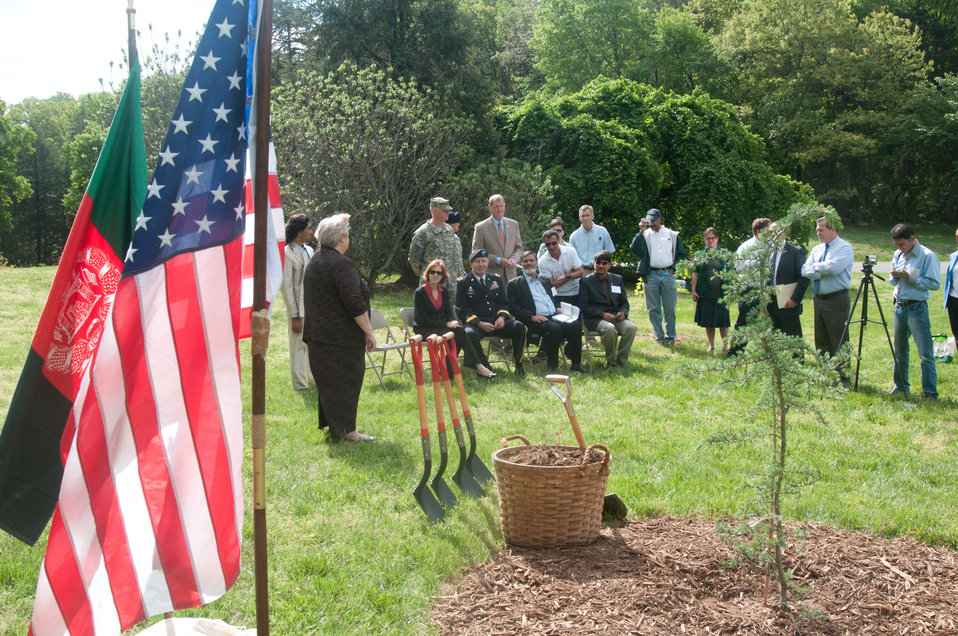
Among the great variety of trees at the U.S. National Arboretum, Director Dr. Colien Hefferan spoke to the assembled audience at the Arbor Day tree planting of a Cedrus deodara ('Karl Fuchs') in honor of an Afghan delegation and to represent the bond with Afghanistan. It is the first of this kind of tree to be planted on the grounds. The tree is originally from Pakta Province and the most important tree in Afghanistan for timber.